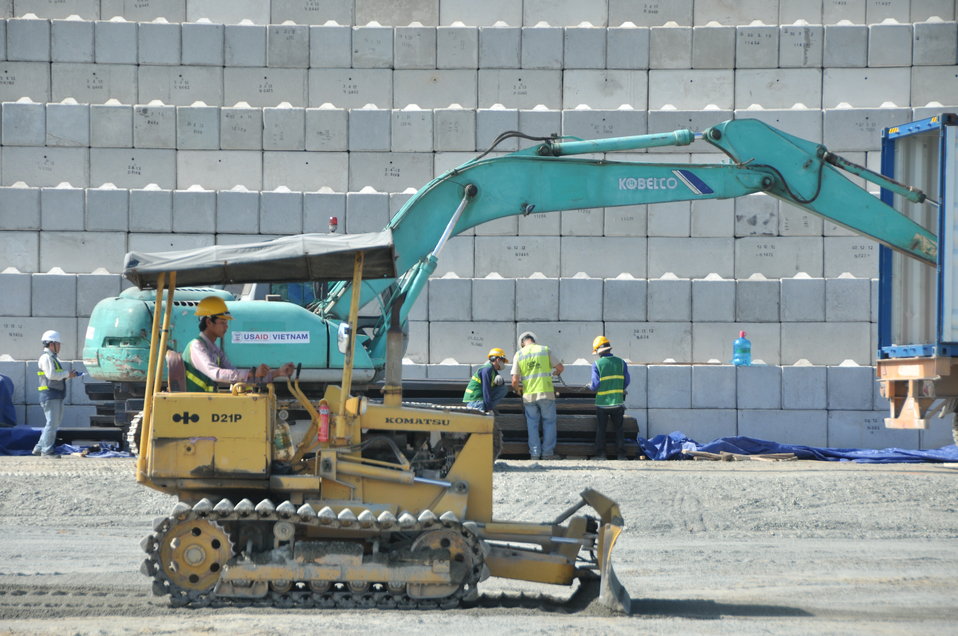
Site construction at the Environmental Remediation of Dioxin Contamination at Danang Airport

USAID is working with Vietnam's Ministry of National Defense on a project to clean up dioxin contamination at Danang Airport.
April 23, 2013